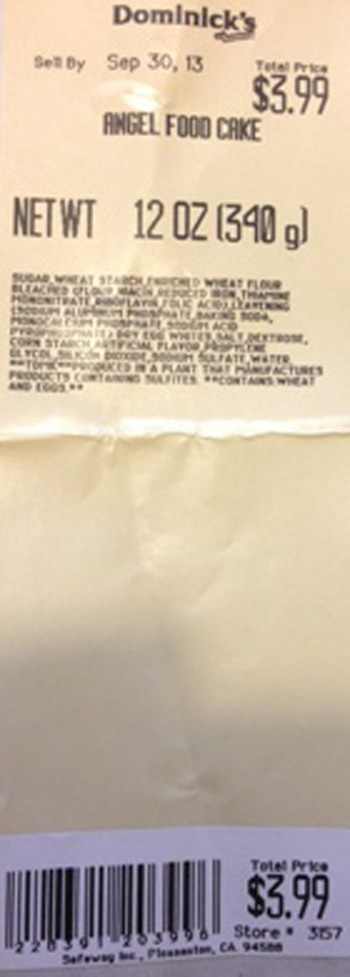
RECALLED – Angel Food Cakes

September 26, 2013 – Product Recall – Safeway Recalls Several Varieties of Angel Food Cake Due to Undeclared Soy and Milk Allergens.